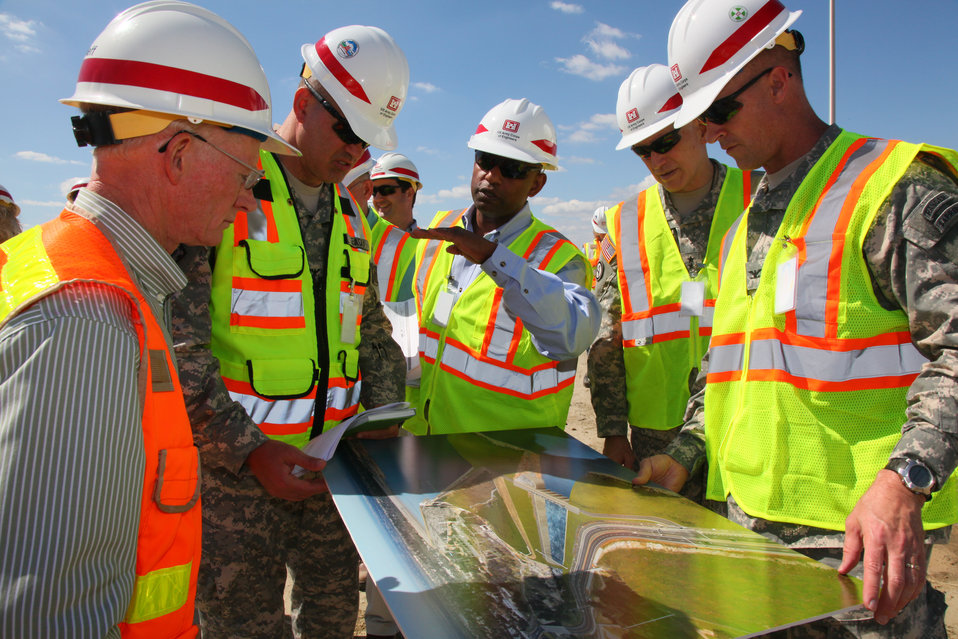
Corps’ Civil Works Leaders visit the Folsom Dam Joint Federal Project

(From left to right) David Neff, project engineer with the U.S. Army Corps of Engineers Sacramento District; Col. Bill Leady, Sacramento District Engineer; James Dalton, chief of Engineering and Construction for the Corps; Maj. Gen. William T. Grisoli, Deputy Commanding General for Civil and Emergency Operations for the Corps; and Col. Mike Wehr, commander for the South Pacific Division, view a rendering and discuss details of the Folsom Dam auxiliary spillway in Folsom, Calif., June 29, 2011. Neff provided a briefing about the progress and construction timelines at the spillway to the senior leaders during the visit.